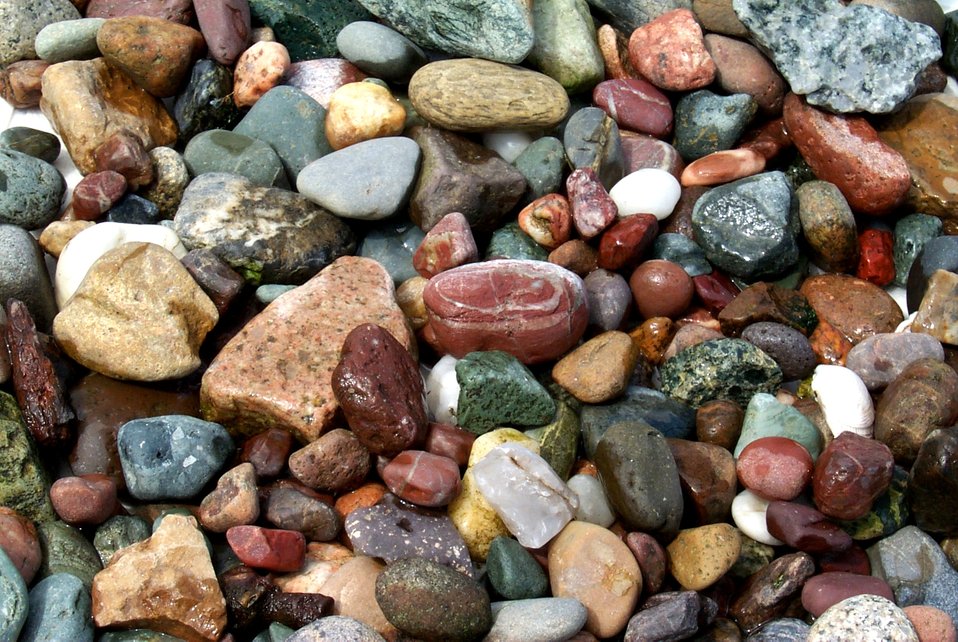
Random rocks picked up on the beach at Gig Harbor.